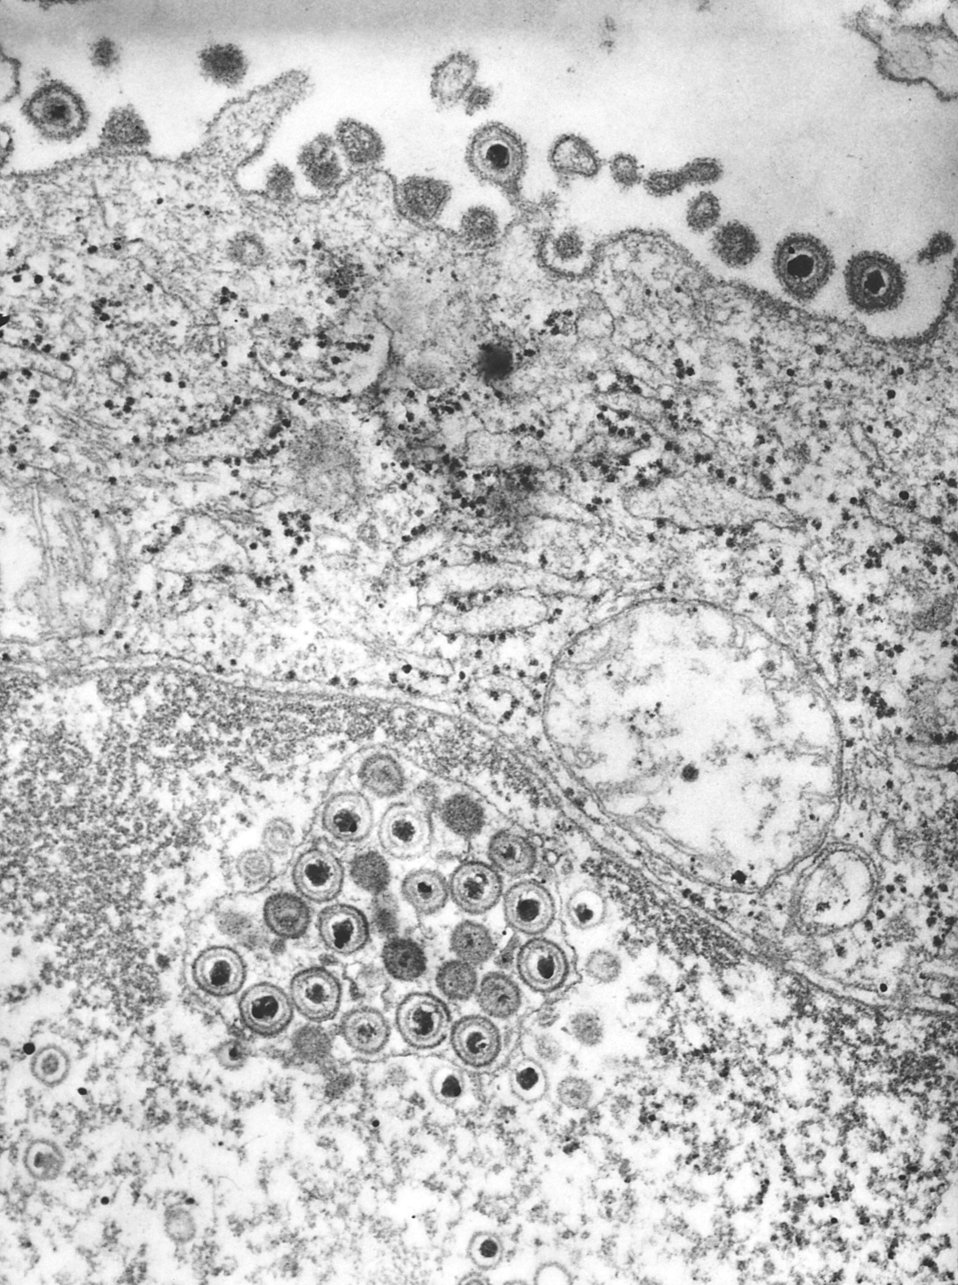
This negatively-stained transmission electron micrograph (TEM) revealed the presence of numerous herpes simplex virions, located both inside the nucleus, and extracellularly in this tissue sample. As members of the Herpesviridae virus family, there are two strains of the herpes simplex virus, HSV-1, which is responsible for cold sores, and HSV-2, which is responsible for genital herpes. At the core of its icosahedral proteinaceous capsid, the HSV contains a double-stranded DNA linear genome.